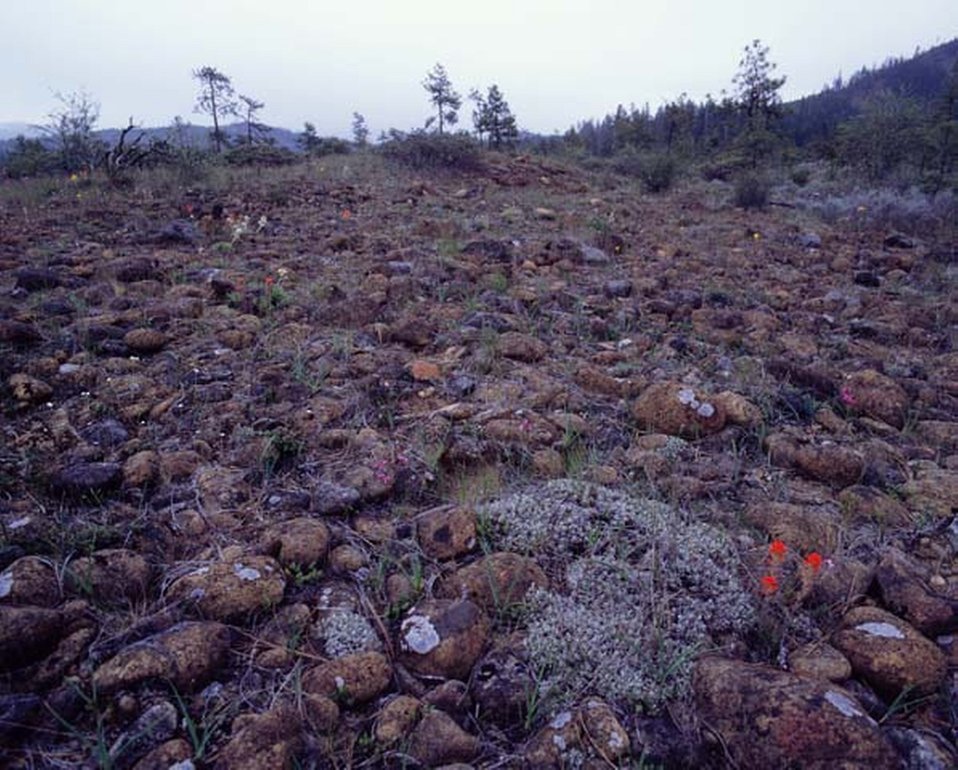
View of the Rough & Ready Wildlife Viewing Area and Indian Paintbrush wildflowers.